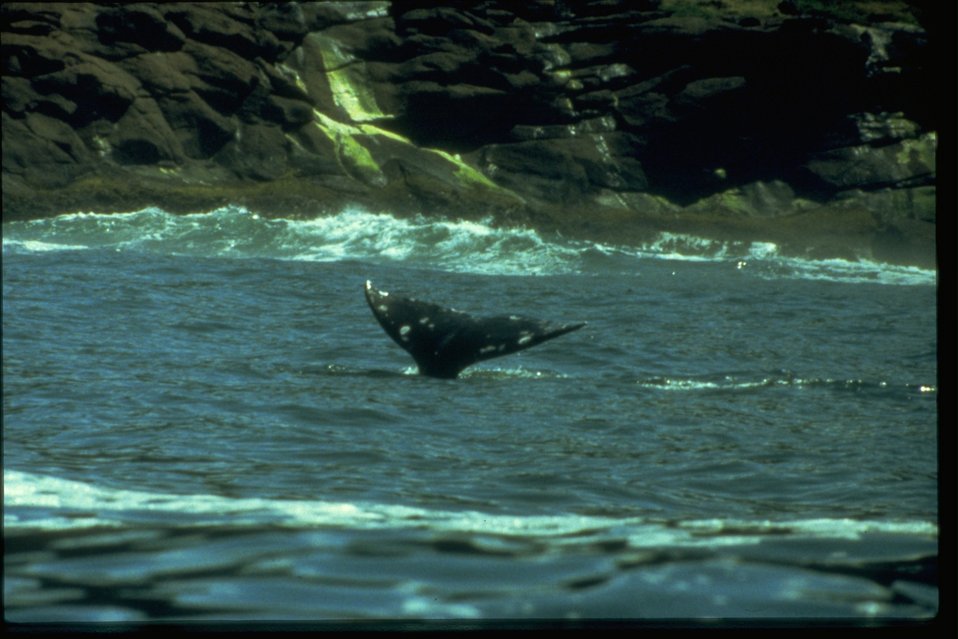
A Gray Whale's tail poking out of the water along the coast. (Also called the Eschrichtius robustus.)